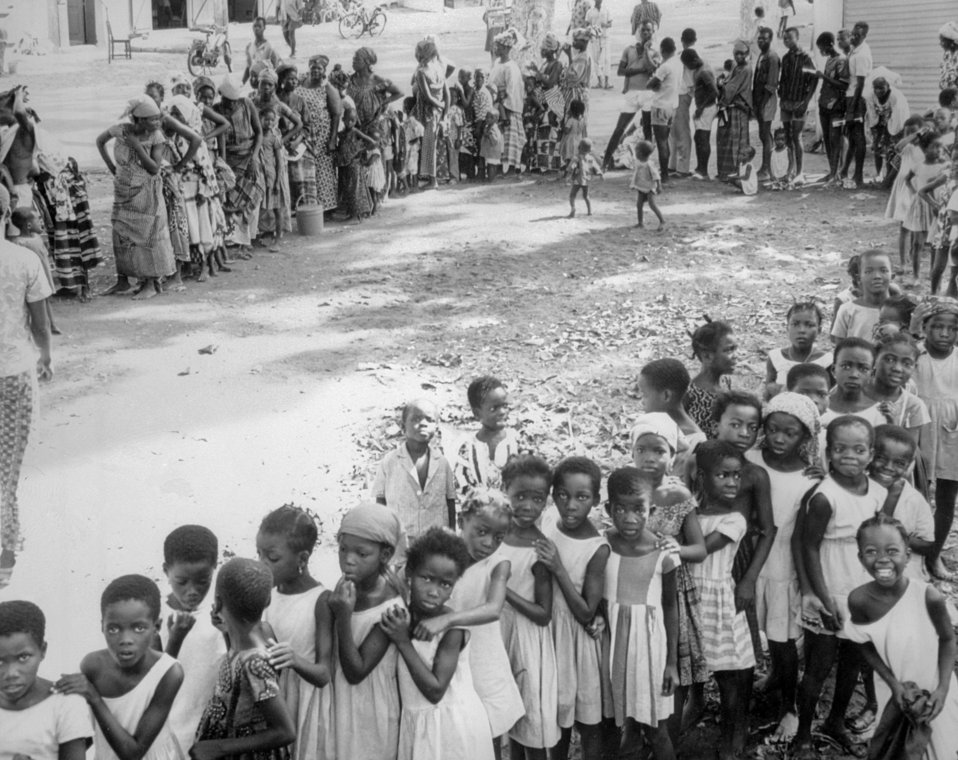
People in Niger, West Africa awaiting a smallpox and measles vaccination.